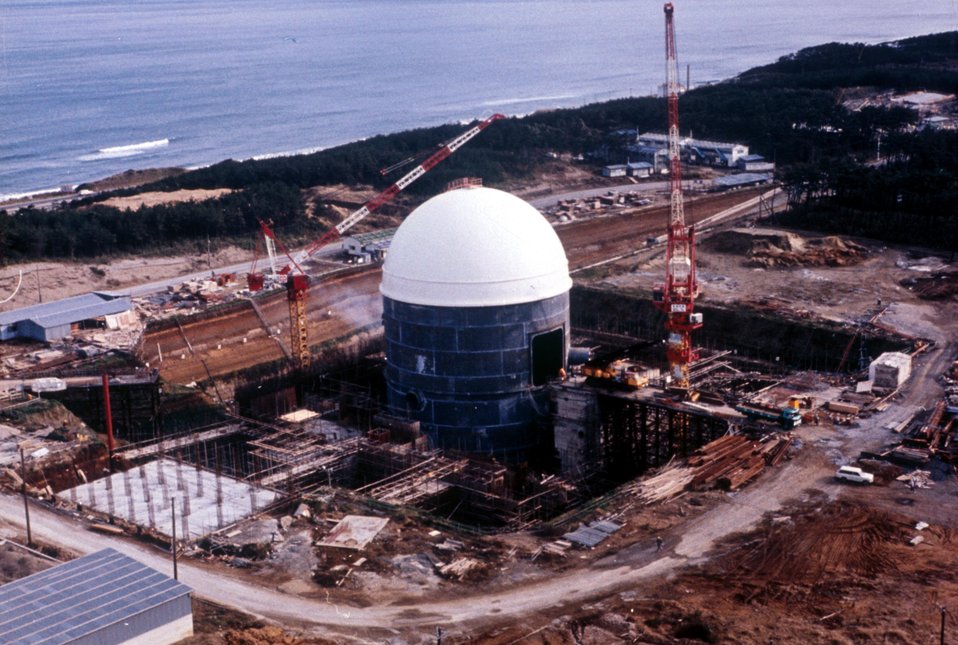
PNC's 'Joyo'